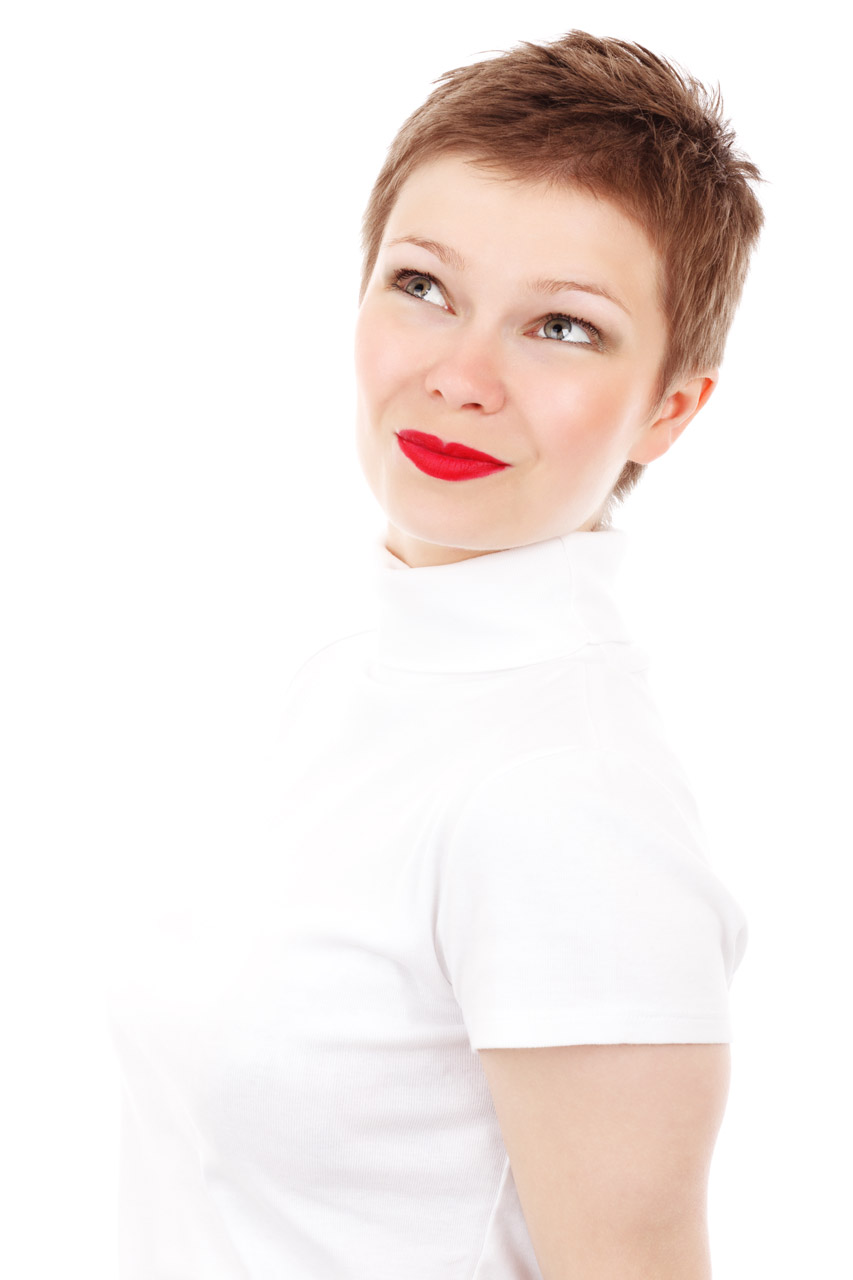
Woman looking up

Young woman isolated on white background is looking up.